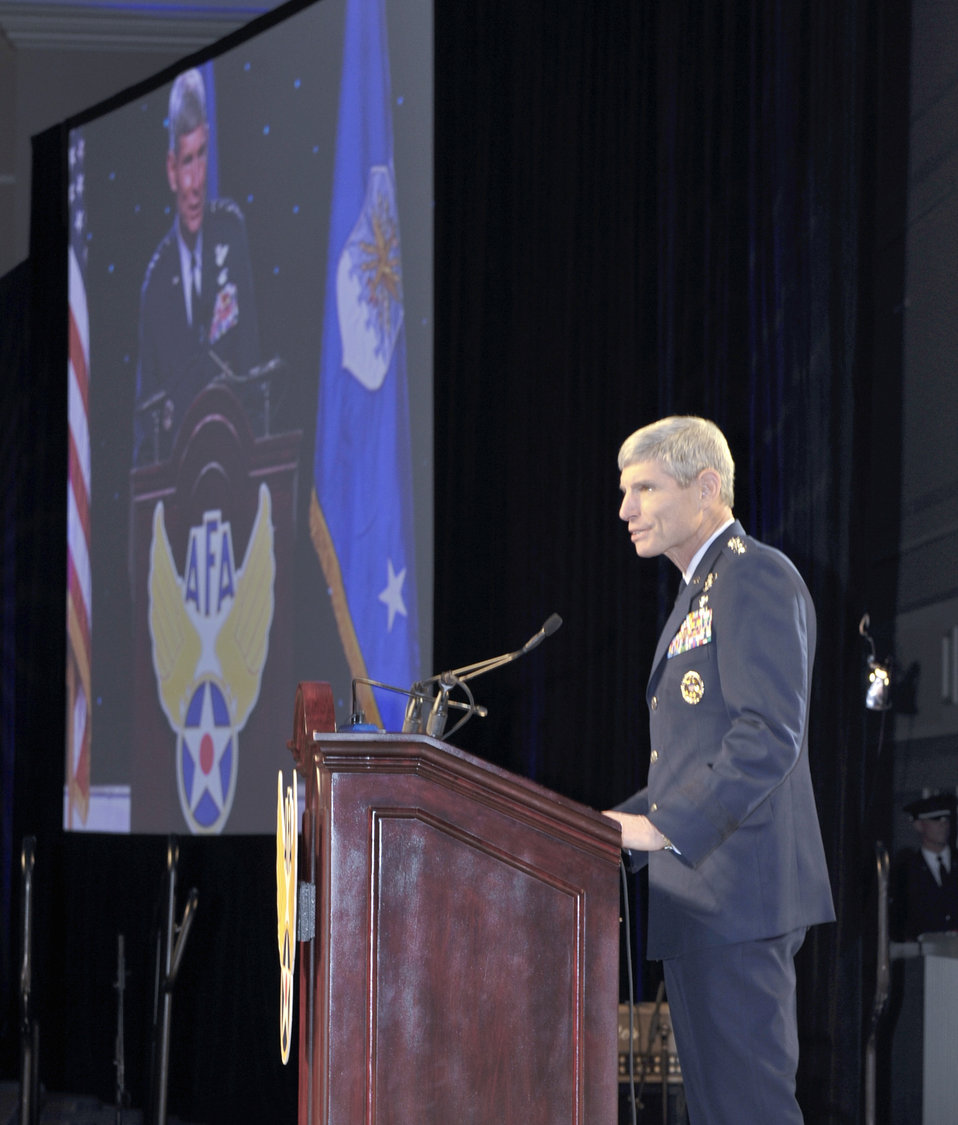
AFA Conference & Technology Exposition

Air Force Chief of Staff Gen. Norton Schwartz speaks during the Air Force Association Air and Space Conference and Technology Exposition opening ceremonies Sept. 13, 2010, at the National Harbor in Oxon Hill, Md. The annual AFA conference is designed to address advances in air, space and cyberspace power.